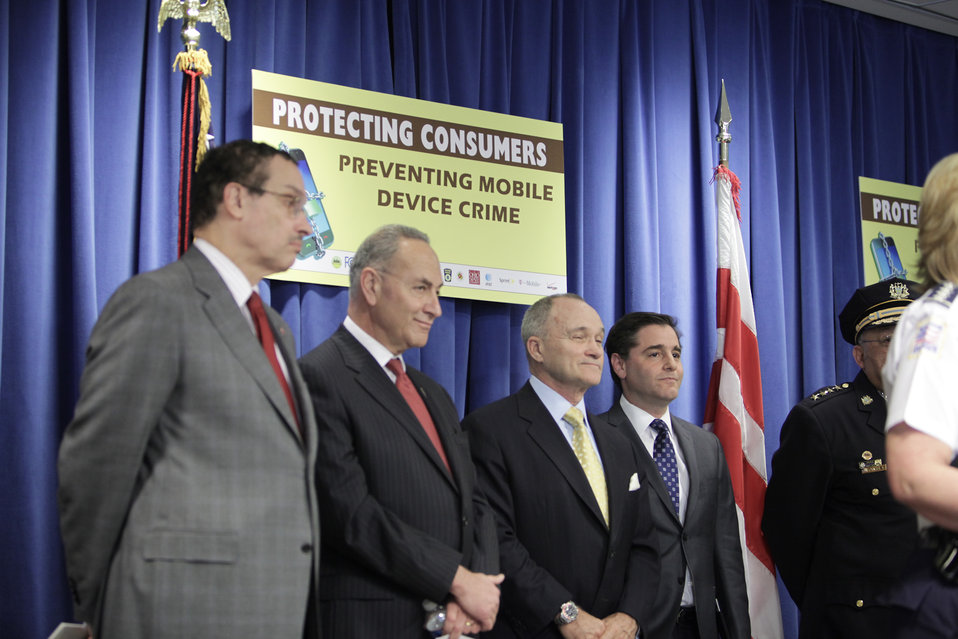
FCC Chairman Genachowski Stands With Supporters

L to R: Mayor of DC Vincent C. Gray, Senator (D-NY) Charles E. Schumer, Commissioner of NYPD Ray Kelly and FCC Chairman Julius Genachowski at the John A. Wilson Building in Washington, DC on April 10, 2012.